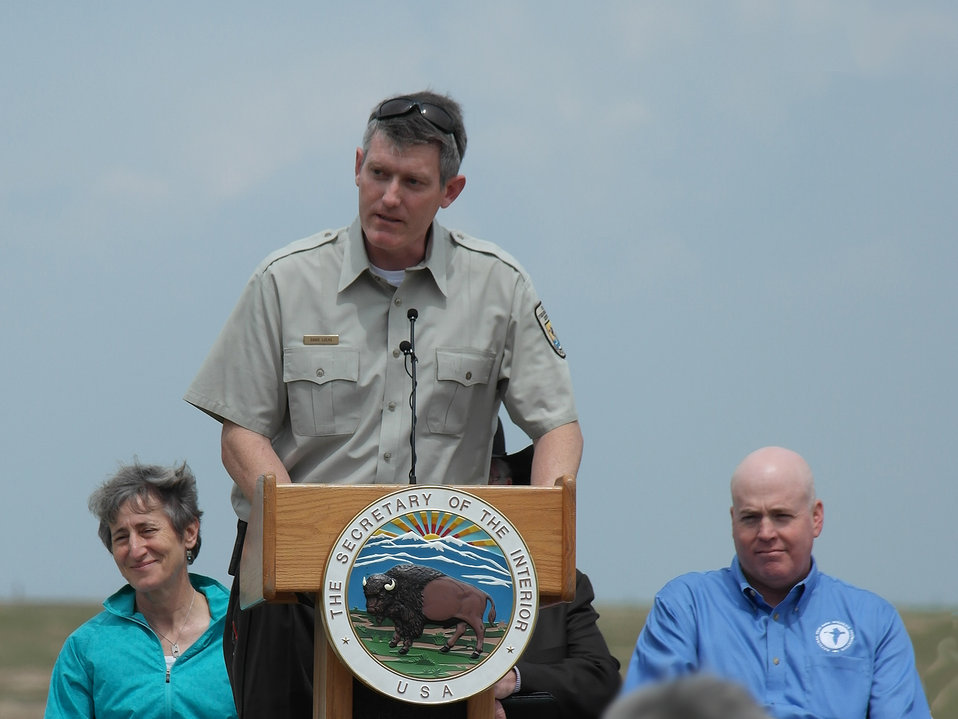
Secretary Jewell Announces $6.7 for Youth Conservation Jobs

Jewell made the announcement at an event at Rocky Mountain Arsenal National Wildlife Refuge outside Denver, Colorado, where she was joined by U.S. Department of Agriculture (USDA) Deputy Under Secretary for Natural Resources and the Environment Arthur “Butch” Blazer; Greg Knadle, Vice President for Government Relations of the National Fish and Wildlife Foundation (NFWF); Refuge Manager David Lucas and youth corps members of Groundwork Denver.